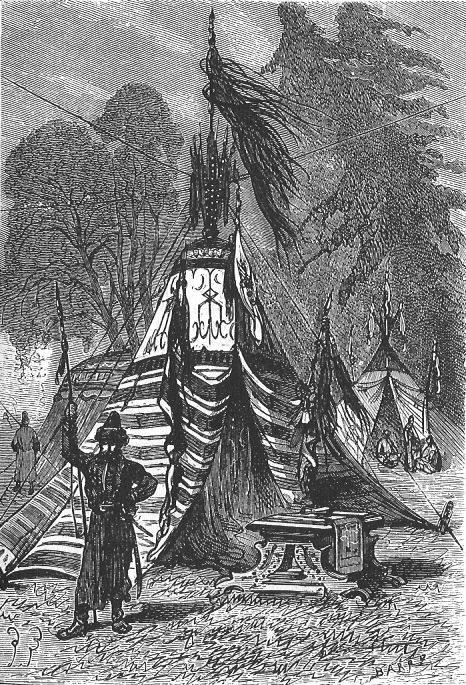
An illustration from the novel 'Michael Strogoff: The Courier of the Czar' by Jules Verne drawn by Jules Férat. Polski: Ilustracja powieści Juliusza Verne'a 'Michał Strogow, kurier carski' autorstwa Julesa Férata. Français : 'Michel Strogoff. Le courier du tzar', Jules Férat. Français : La tente de Féofar dominait les tentes voisines.